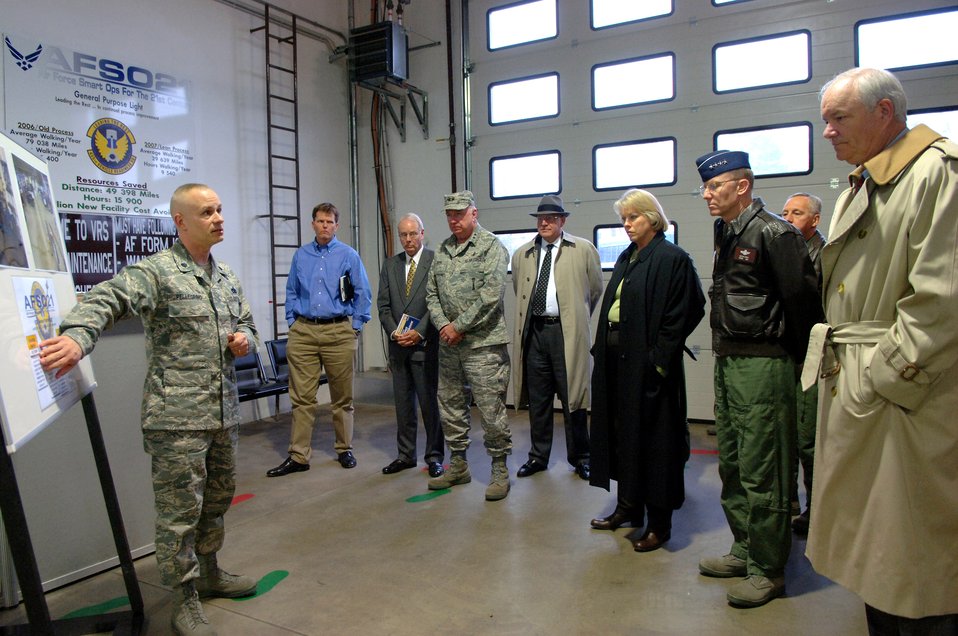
USAFE hosts AFSO 21 process council

Lt. Col. Paul Pellegrino (left) briefs Secretary of the Air Force Michael W. Wynne (far right) and other senior executives and general officers on Air Force Smart Operations for the 21st century projects implemented throughout his squadron Dec. 11 at Ramstein Air Base, Germany. Colonel Pellegrino is the 435th Vehicle Readiness Squadron commander.